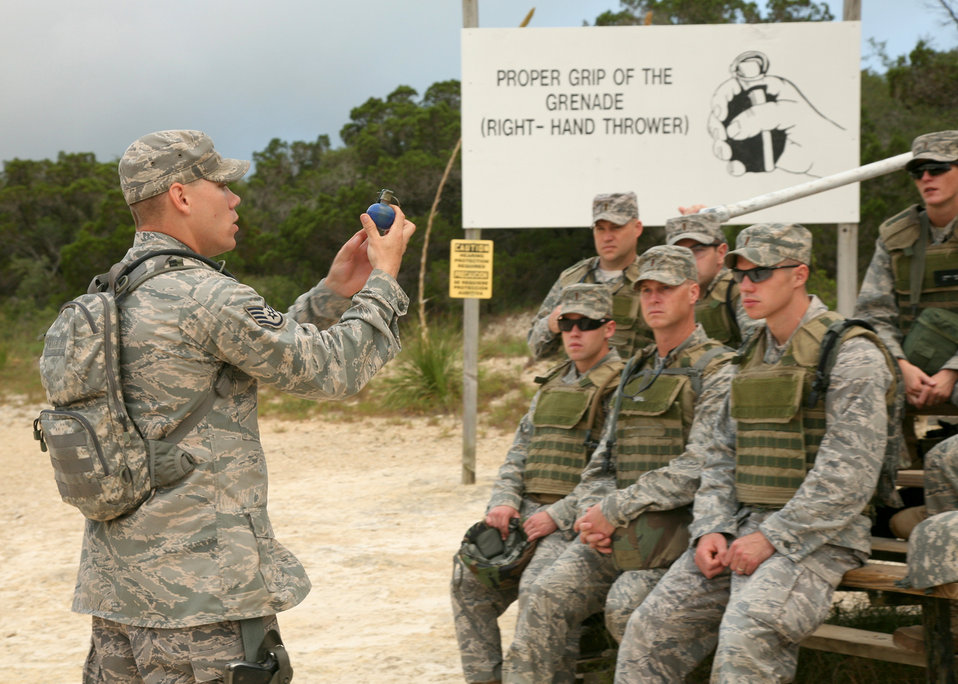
Training with a bang!

Staff Sgt. John Plemons gives a lecture on employing the M-67 hand grenade June 18 at Camp Bullis, Texas. The Security Forces Basic Officers' Course students practice throwing simulated grenades before moving on to live ordnance. Sergeant Plemons is an instructor with the 343rd Training Squadron.